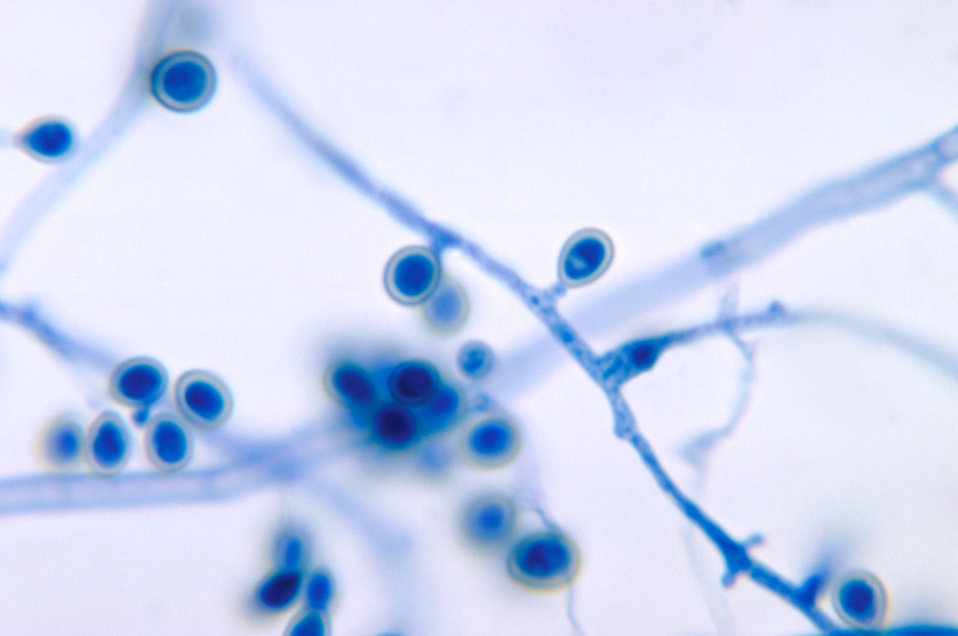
This photomicrograph reveals the conidiophores with conidia of the fungus Pseudallescheria boydii from a slide culture.